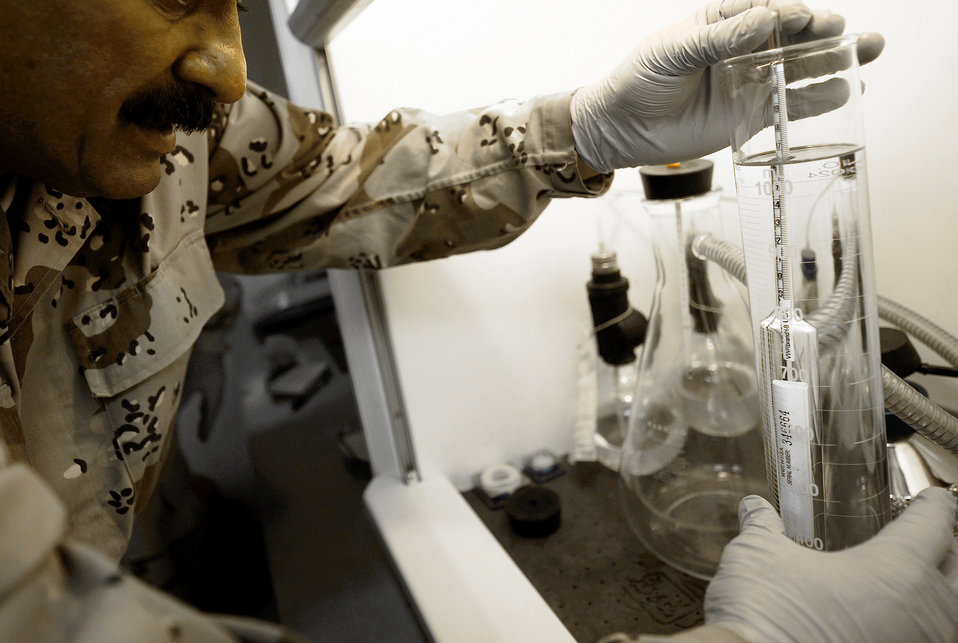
Logistics Airmen play crucial dual-role before Kirkuk transition

An Iraqi warrant officer tests jet fuel samples with guidance from Tech. Sgt. Ryan Smith (not pictured) April 7, 2011, at Kirkuk Regional Air Base, Iraq. Sergeant Smith has been advising his Iraqi counterparts for more than a month to prepare them for autonomous operations after U.S. military forces transition out.